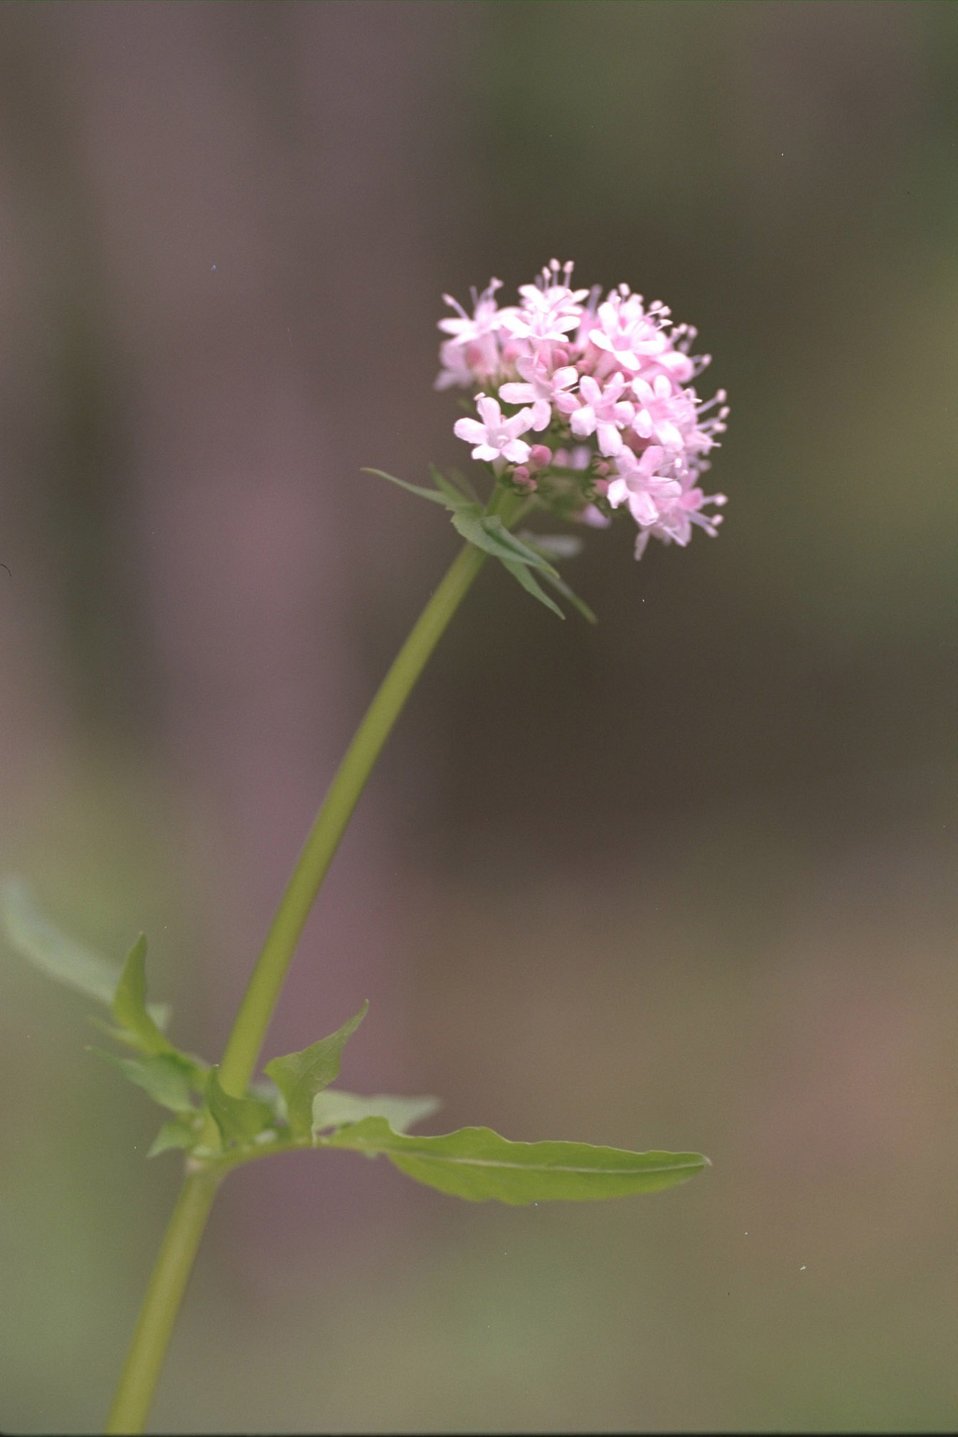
Mountain valerian (Valeriana sitchensis) at Lower Table Rock.